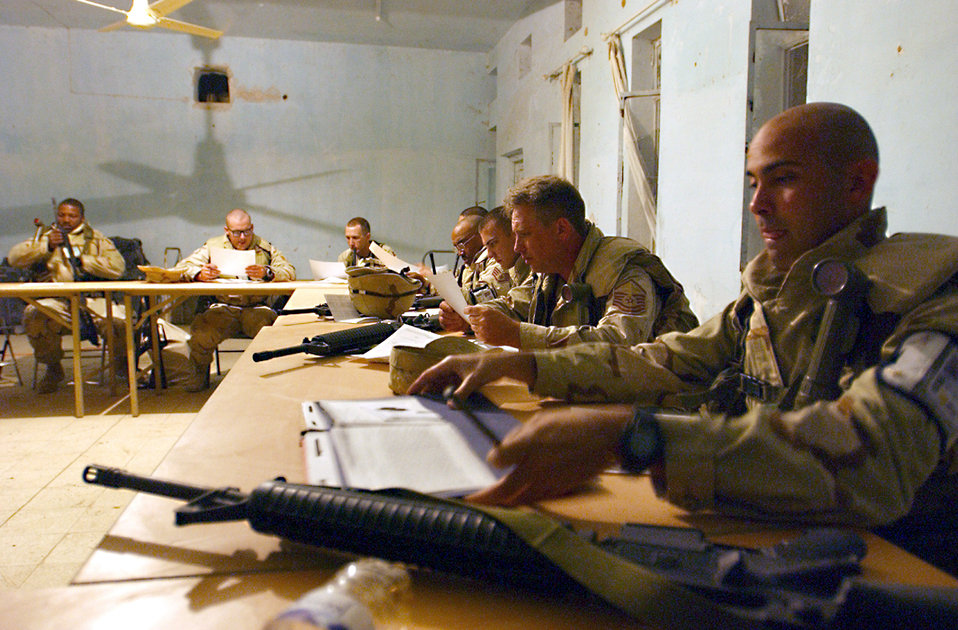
Inprocessing

OPERATION IRAQI FREEDOM -- Members of 5th Combat Communications Group from Robbins AFB Georgia inprocess PERSCO at Tallil Air Base Iraq supporting Operation Iraqi Freedom.